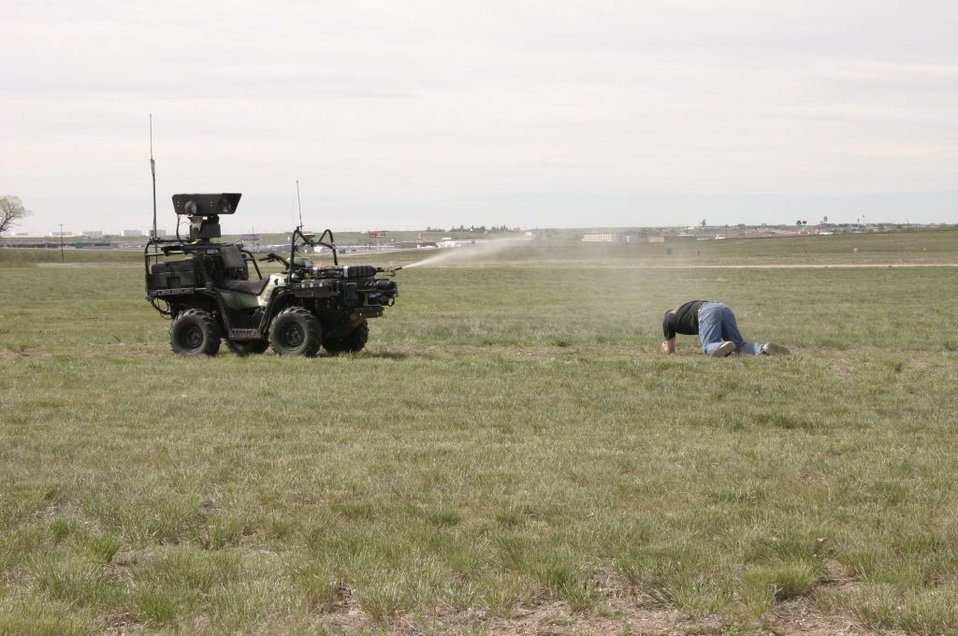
Air Force Research Lab gives new meaning to 'battlebots'

F.E. WARREN AFB, Wyo. - A robotic scout sprays simulated pepper spray at an aggressor demonstrating how remotely manned vehicles can conduct security forces missions here. The remote, detection, challenge and response system is an Air Force Research Laboratory initiative.